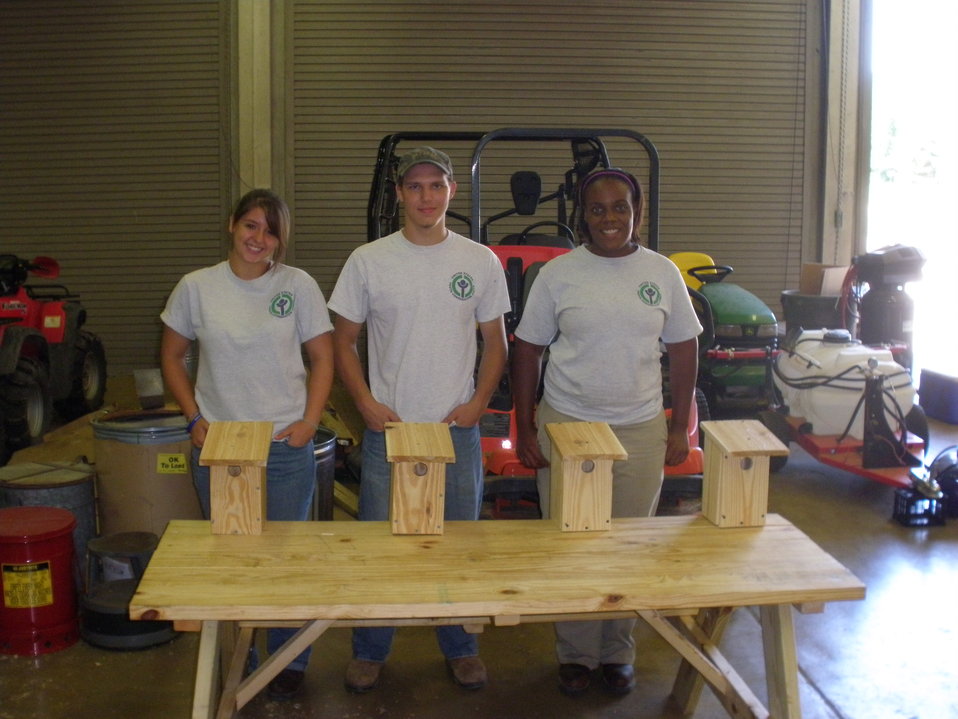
Caddo Lake National Wildlife Refuge, TX